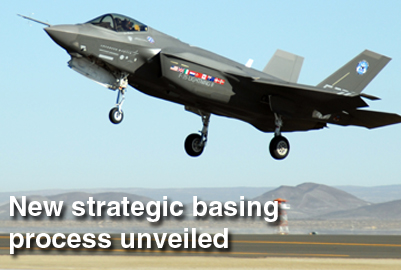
Air Force officials unveil new strategic basing process

A new process has been developed to define how Air Force experts make basing decisions. The process was put into practice in selecting potential training and operational sites for the F-35 Lightning II joint strike fighter.